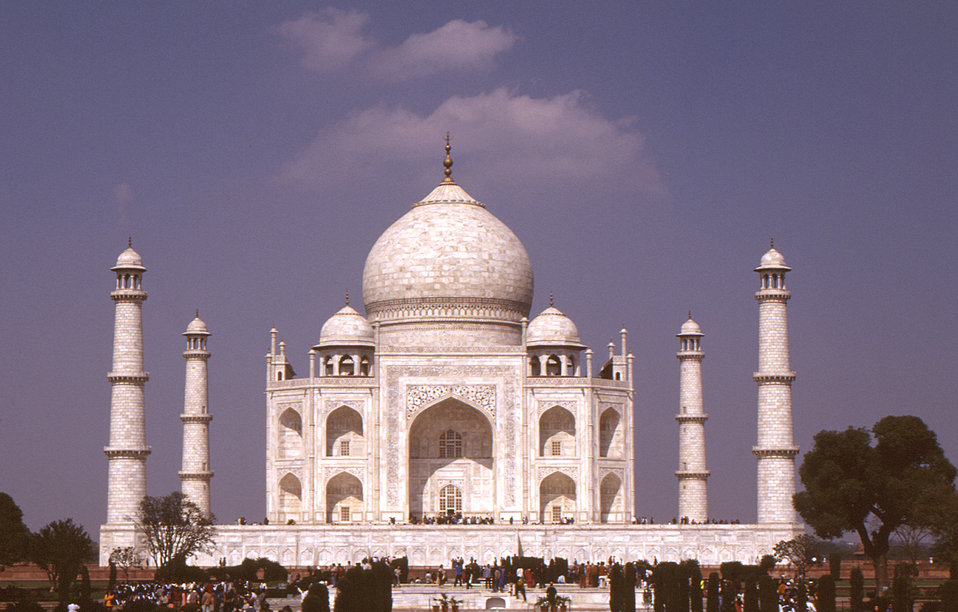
This 2000 image of the Taj Mahal monument in Agra, India, was taken during a 'Stop Transmission of Polio' (STOP) assignment between January and April, 2000. At the time of this field assignment, team member/photographer Chris Zahniser, B.S.N., R.N., M.P.H., was assigned to the state of Uttar Pradesh in northern India, and spent three months working in the districts of Gorakhpur and Deoria.